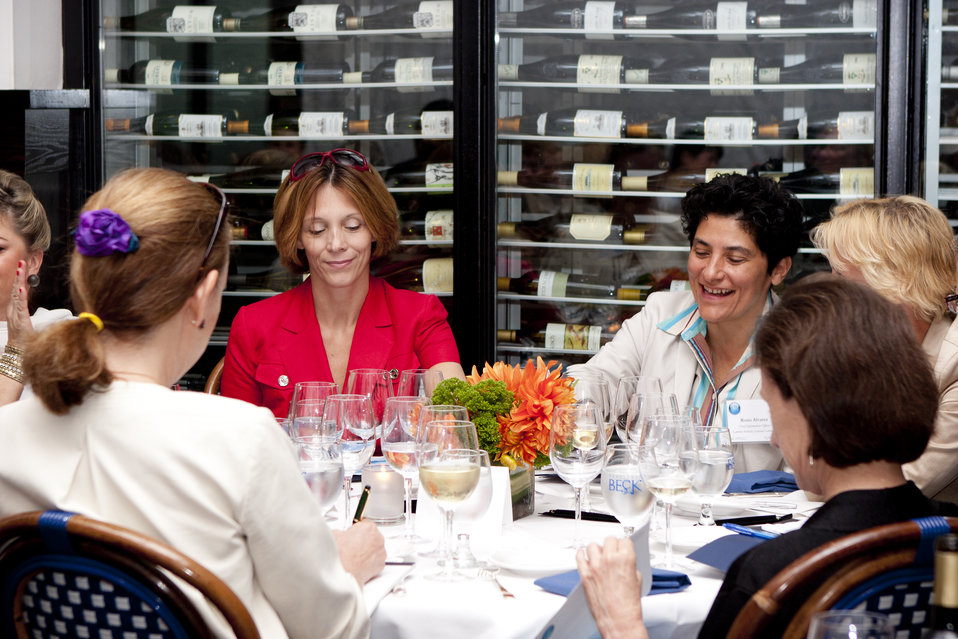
WomenandEnergy 49